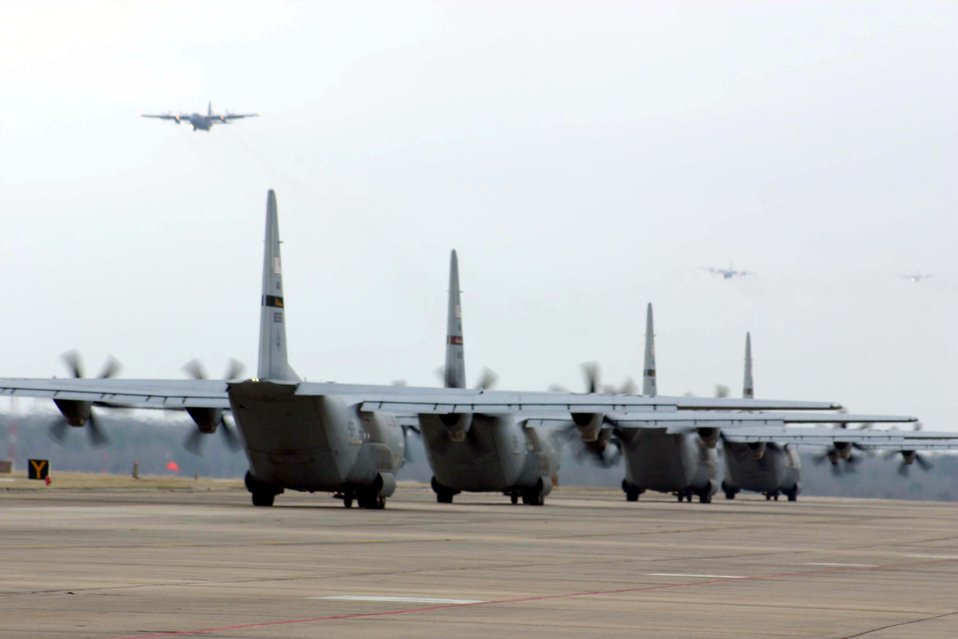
Hey 'J'

LITTLE ROCK AIR FORCE BASE, Ark. -- Four C-130 Hercules J-model aircraft line up to take off during a procedures, development and evaluation test.